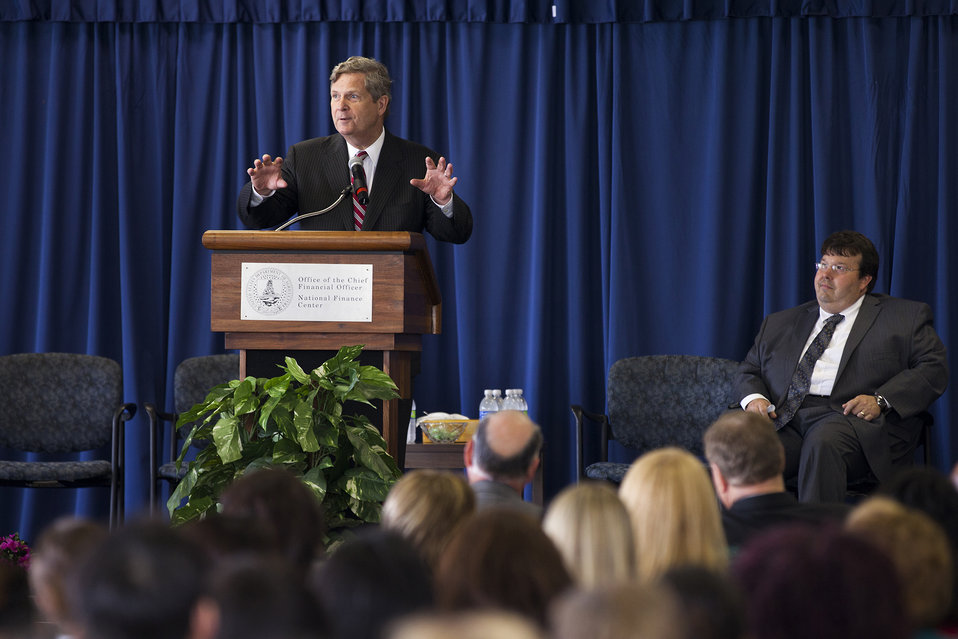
Secretary of Agriculture Tom Vilsack answered questions from staff of the National Finance Center (NFC) on Wednesday, May 1, 2013 in New Orleans, La.